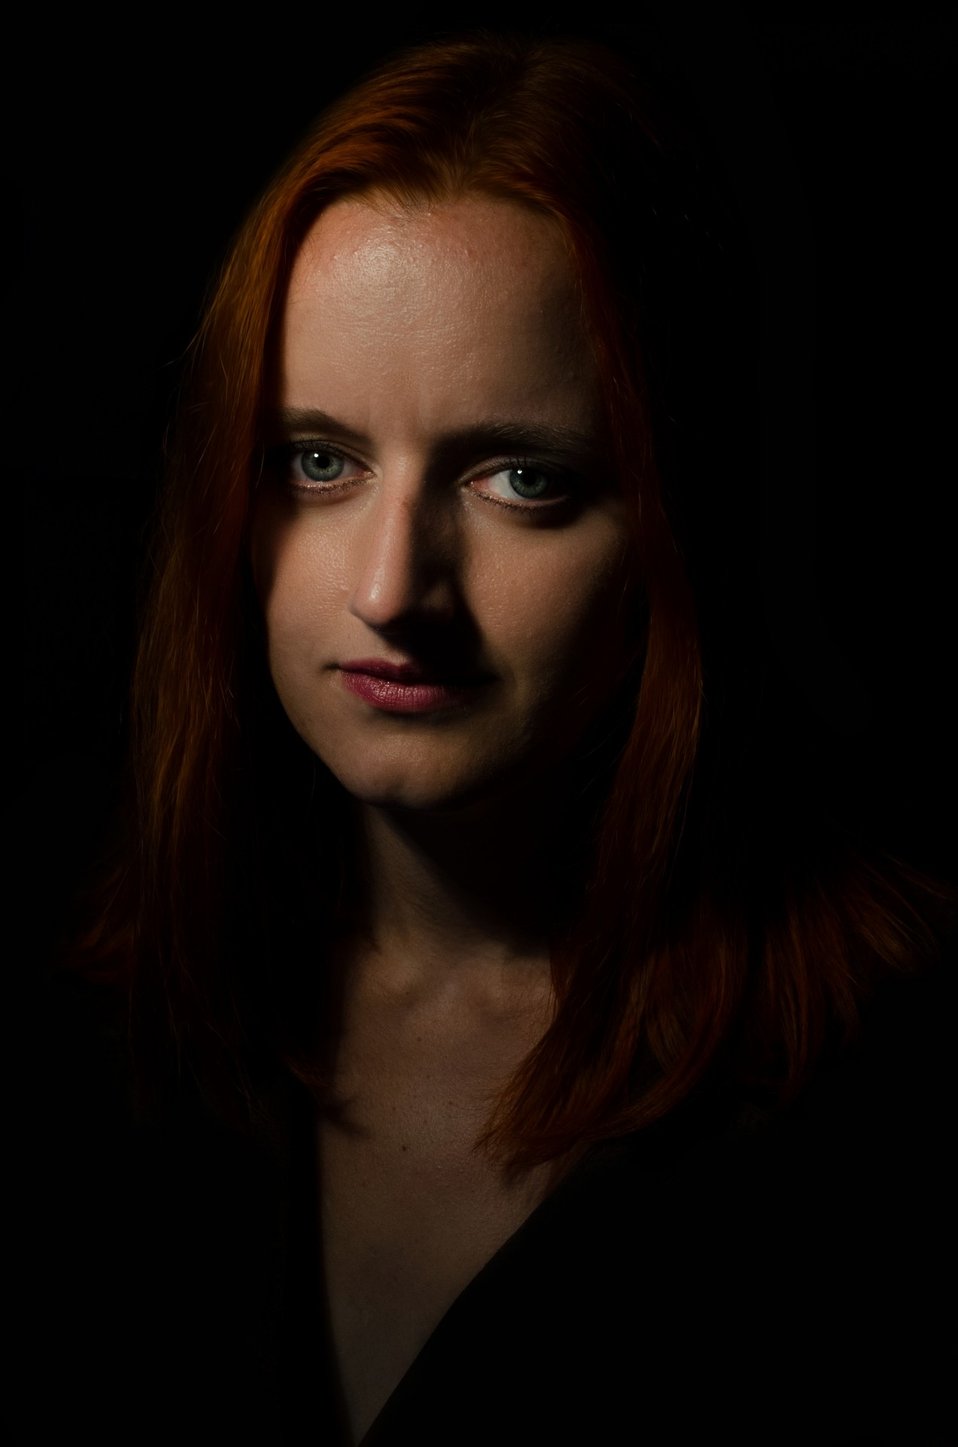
Woman on the black background.